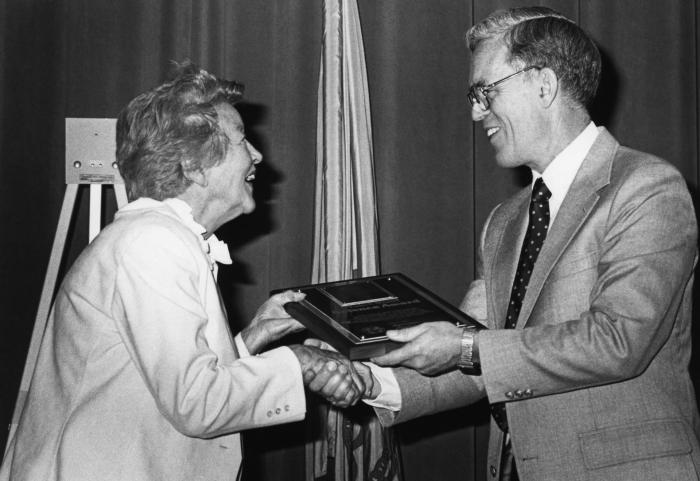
This 1986 photograph depicted the Centers for Disease Control Director at that time, Dr. James O. Mason (right), presenting a plaque to the wife of Dr. Charles C. Shepard during the first annual Charles C. Shepard Science Award ceremonies.